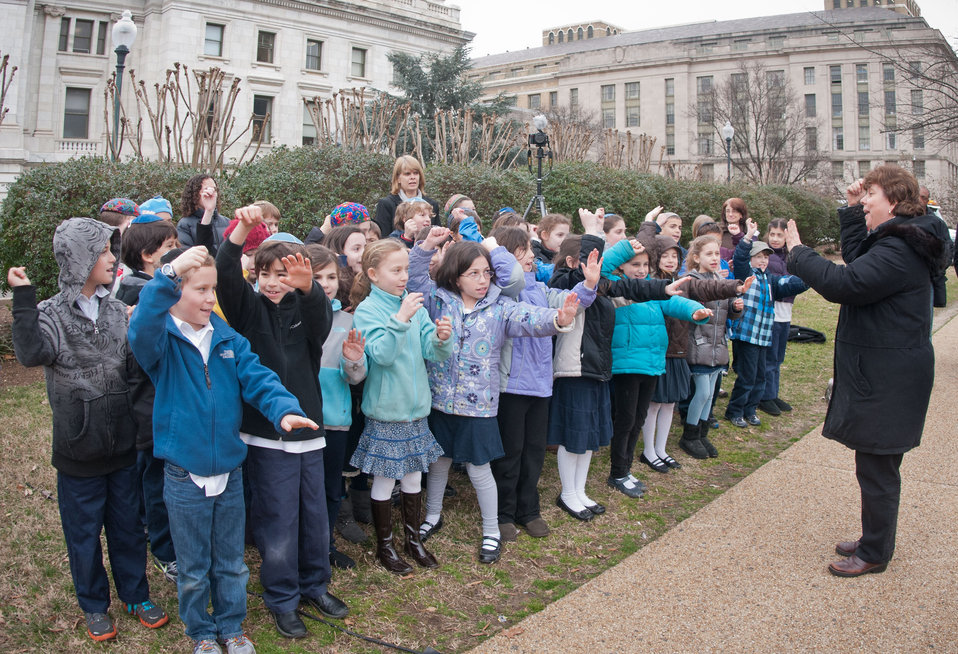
3rd Grade Class of the Jewish Primary Day School of the Nation’s Capital sing “Tree of Life” during the Celebration of Tu B’Shevat “The New Year of the Trees” event, at the District of Columbia western lawn next to the USDA Headquarters, Whitten Building at 14th Street and Independence Ave SW, in Washington, D.C. on Wednesday, February 8, 2012.